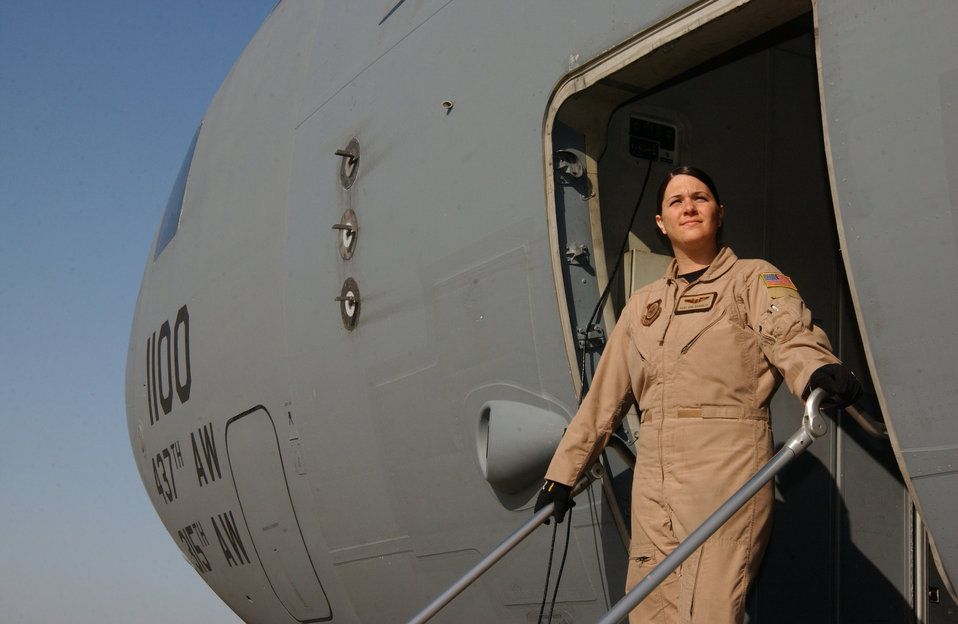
C-17 Loadmaster

On the road, the C-17Globemaster III is Staff Sgt. Adrienne Gariglio's home, office and warehouse. But she's ready to convert the jet into a flying ambulance, too.